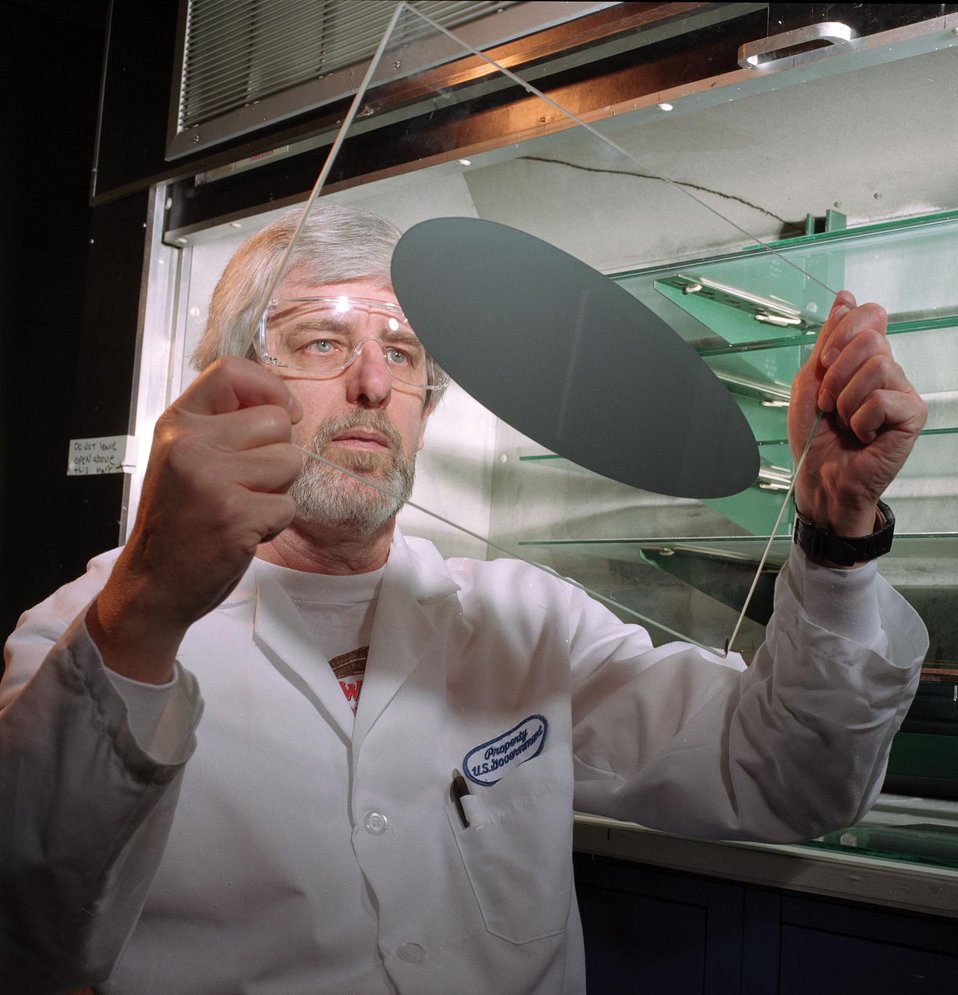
ARGONNE SCIENTIST SHOWS THE ANL DEVELOPED CERAMIC MEMBRANE MATERIAL FOR HYDROGEN PRODUCTION.

CERAMIC MEMBRANE CONVERSION IS ONE OF THE HYDROGEN PRODUCTION TECHNOLOGIES BEING STUDIED BY ARGONNE. A TEAM OF CERAMICS EXPERTS HAS DEVELOPED A CERAMIC MEMBRANE THAT CAN EXTRACT HYDROGEN FROM METHANE, THE CHIEF COMPONENT OF NATURAL GAS. FUEL CELLS COMBINE HYDROGEN AND OXYGEN TO PRODUCE ELECTRICITY AND WATER, A MUCH CLEANER SYSTEM COMPARED TO COMBUSTION ENGINES. COMMERCIAL USE OF FUEL CELLS WILL BE ONE OF THE NATION'S FIRST STEPS TOWARD A HYDROGEN ECONOMY.